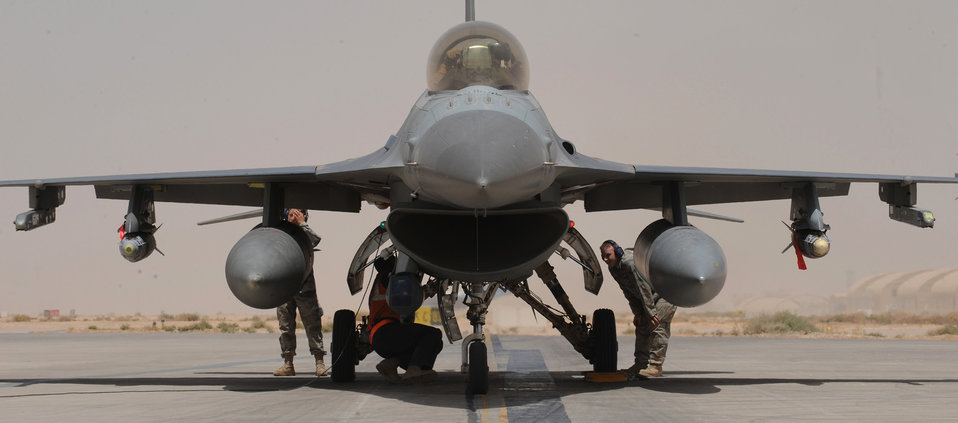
Weapons loaders arm jets for the fight

Airmen from the 332nd Expeditionary Aircraft Maintenance Squadron make final checks to weapons loaded onto an F-16 Fighting Falcon before takeoff June 29 at Joint Base Balad, Iraq.